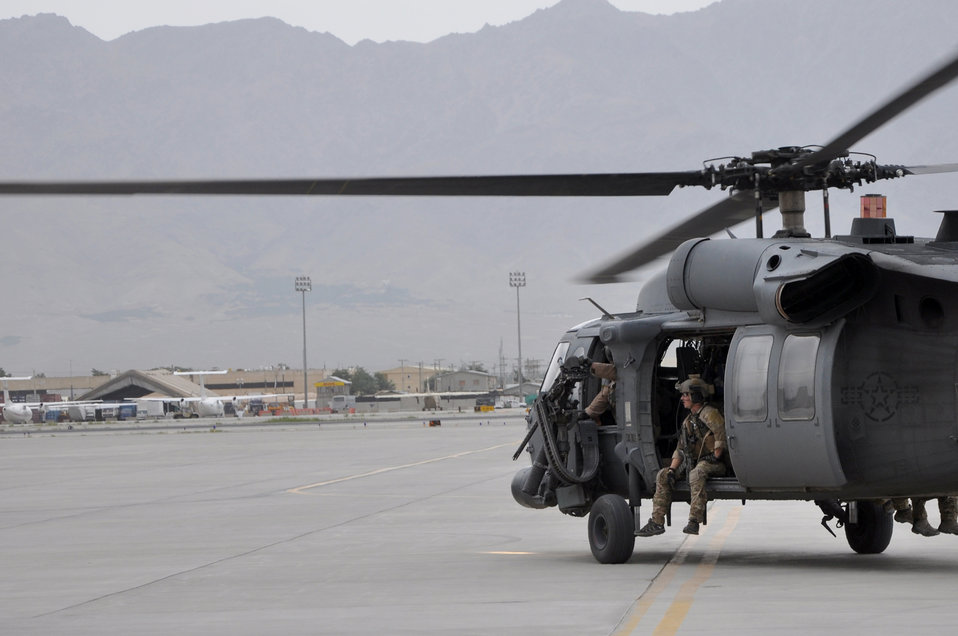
Pave Hawk rescue mission

An HH-60G Pave Hawk helicopter pilot and pararescueman prepare for takeoff June 11, 2011, at Bagram Airfield, Afghanistan.